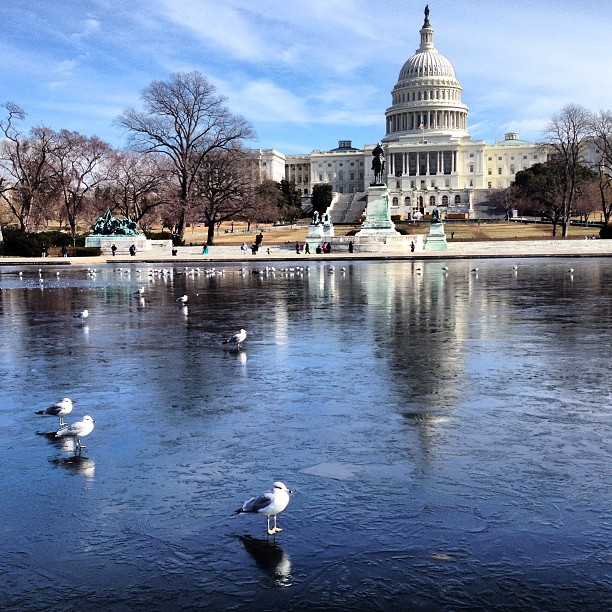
Sunday afternoon at the Capitol Reflecting Pool.